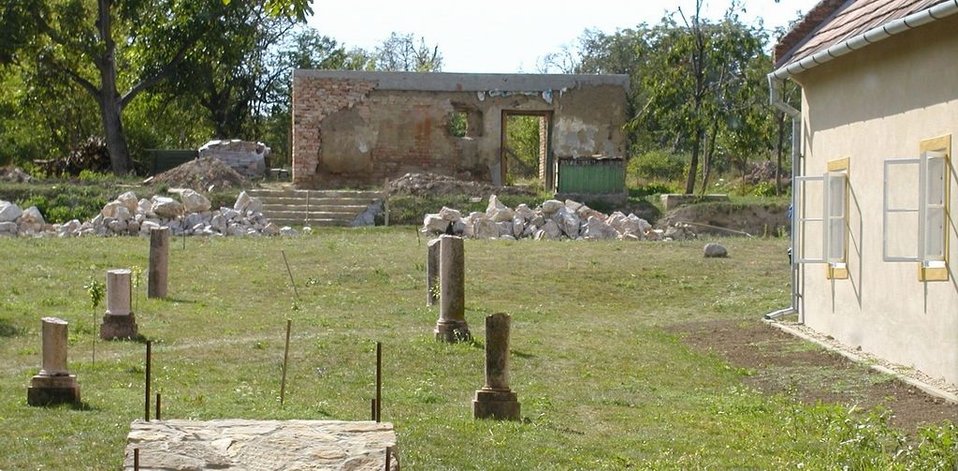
Rekonštrukčné práce Licencovanie: Autorom fotografie je Imrich Šimonek z Dubníka sk:Category:Dubník sk:Kategória:Presunúť na Commons